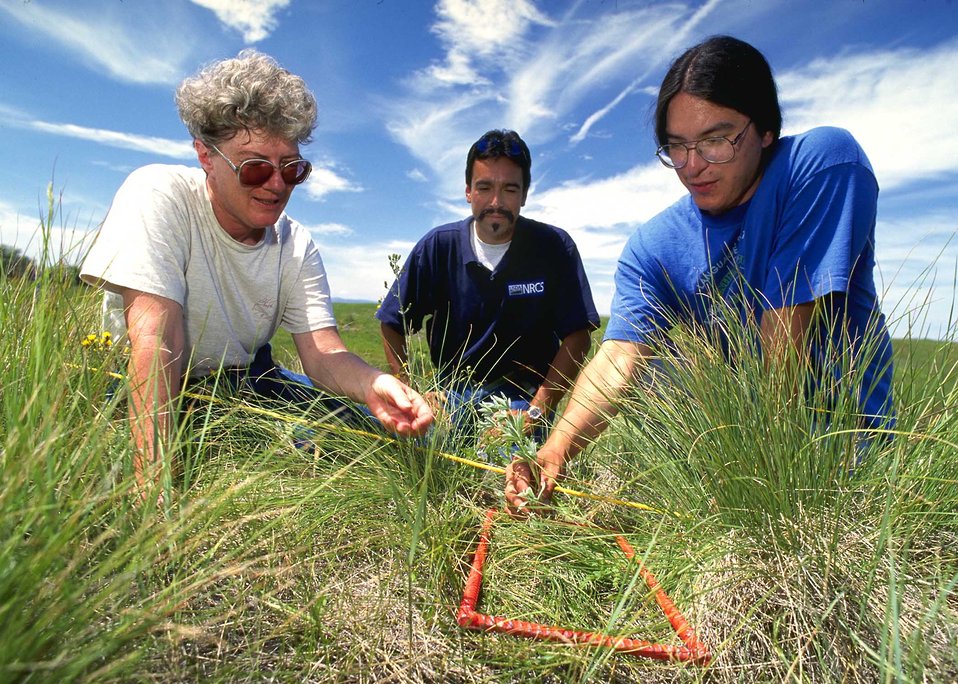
Students studying grass

Mountain Elk Wall, a student intern from the Salish/Kootenai College on the Flathead Indian Reservation, is working on a native grasslands study, transecting different populations of grasses to see if they are deteriorating or growing, and investigating which factors are influencing their growth or decline.